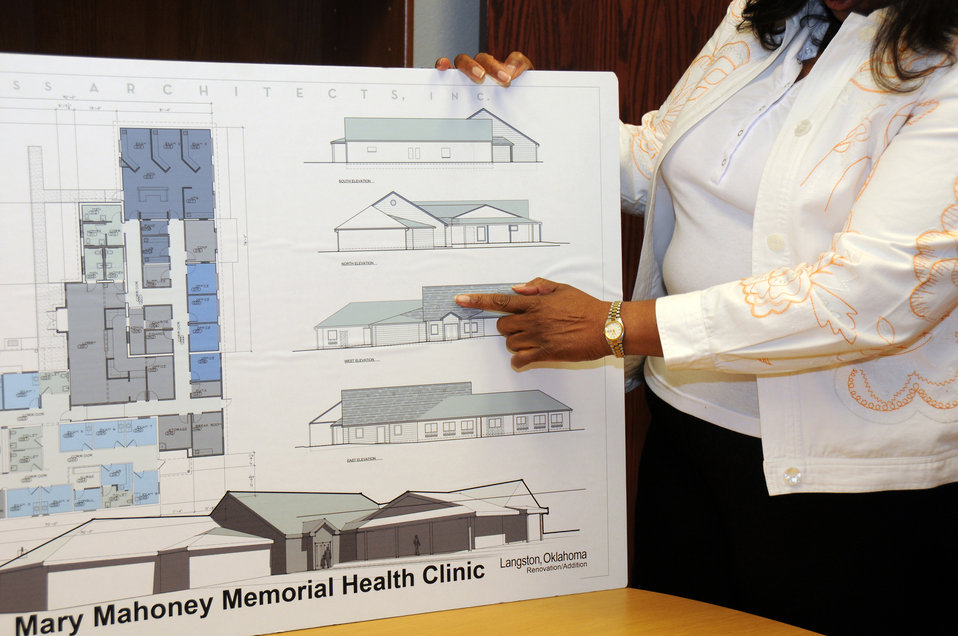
The architectural drawing for the remodeling and expansion of the Mary Mahoney Health Center in Langston, Oklahoma is displayed on August 14, 2009. The clinic received loans through the American Recovery and Reinvestment Act (ARRA) provided to the U.S. Department of Agriculture (USDA) Rural Development (RD) Community Facilities Direct and Guaranteed Loans program. The loans are helping the clinic to expand its facilities and provided better health care to the local community.